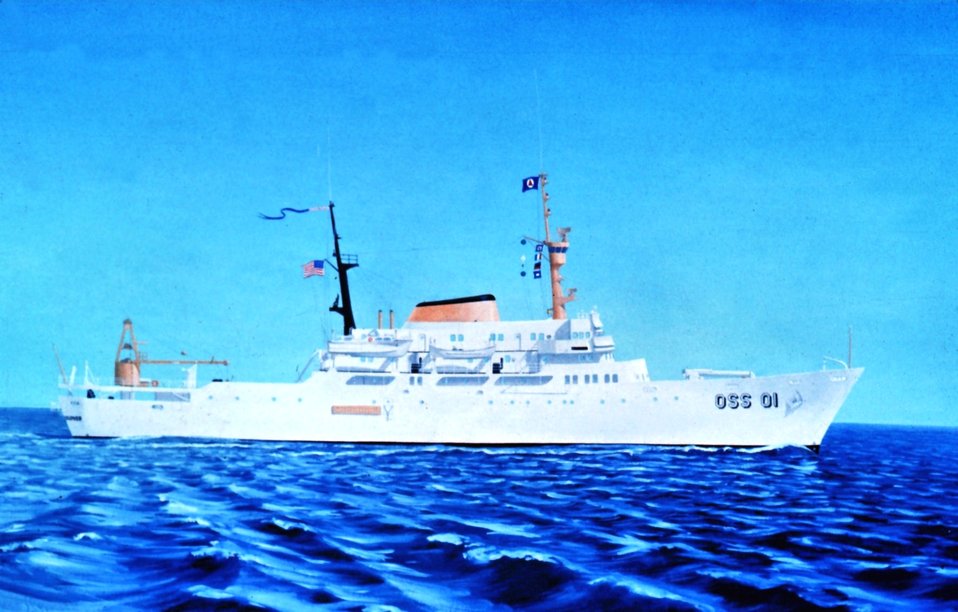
Artist's conception of the NOAA Ship OCEANOGRAPHER.